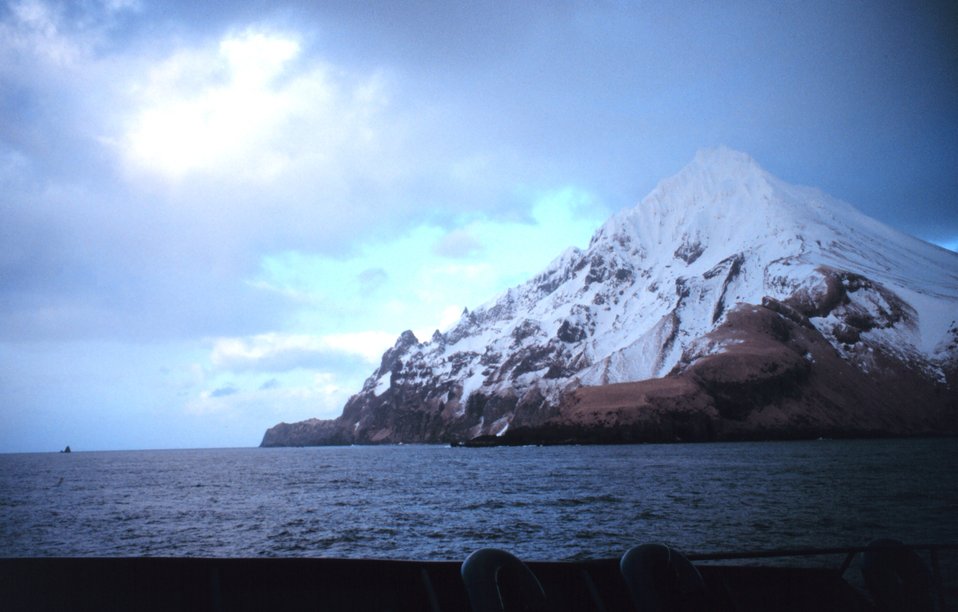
An Aleutian peak and coastline